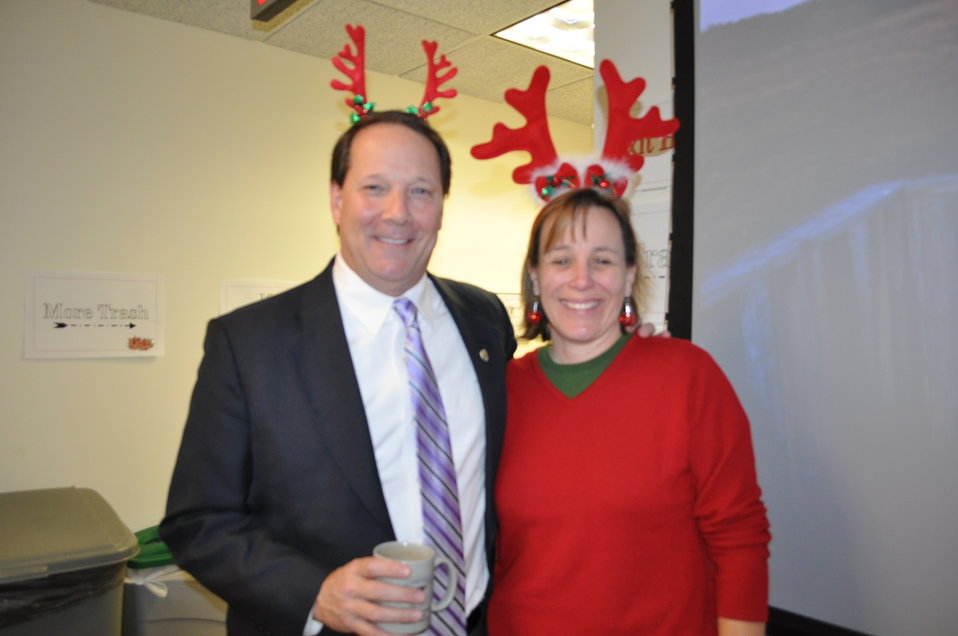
Jim Kurth and Deb Rocque